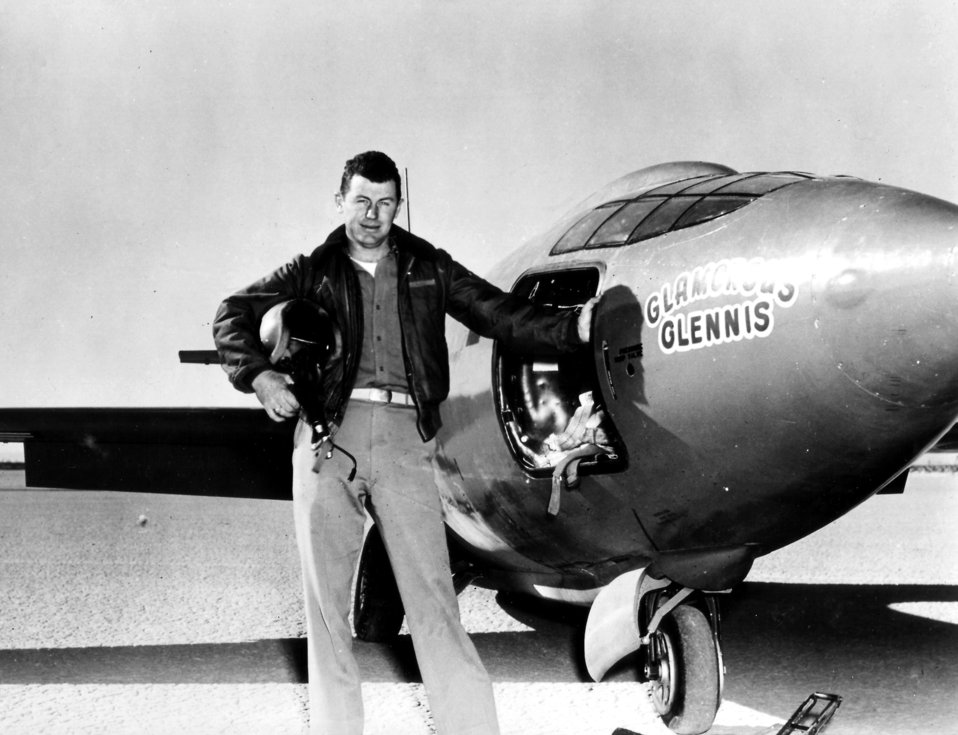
First Mach flight propels Yeager, Air Force into history

Capt. Charles E. Yeager (shown standing next to the Air Force's Bell-built X-1 supersonic research aircraft) became the first man to fly faster than the speed of sound in level flight on October 14, 1947.